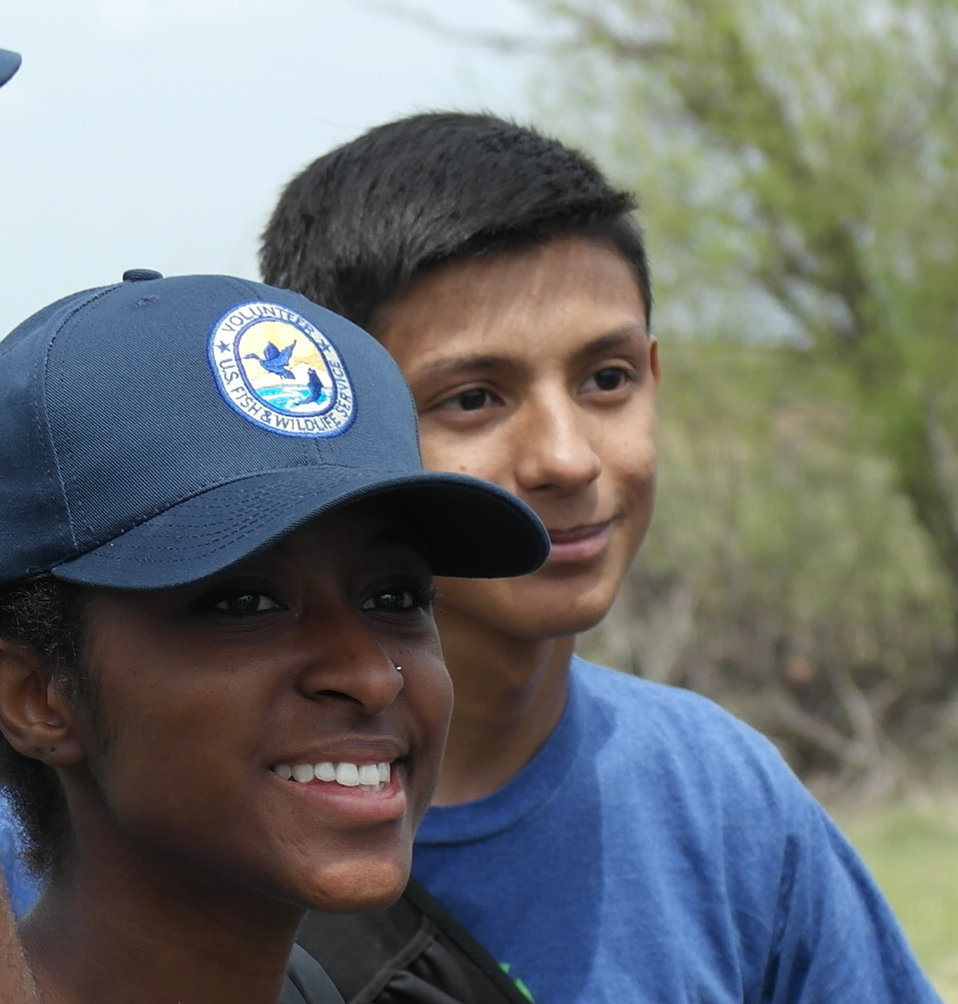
Groundwork Denver

Jewell made the announcement at an event at Rocky Mountain Arsenal National Wildlife Refuge outside Denver, Colorado, where she was joined by U.S. Department of Agriculture (USDA) Deputy Under Secretary for Natural Resources and the Environment Arthur “Butch” Blazer; Greg Knadle, Vice President for Government Relations of the National Fish and Wildlife Foundation (NFWF); Refuge Manager David Lucas and youth corps members of Groundwork Denver.